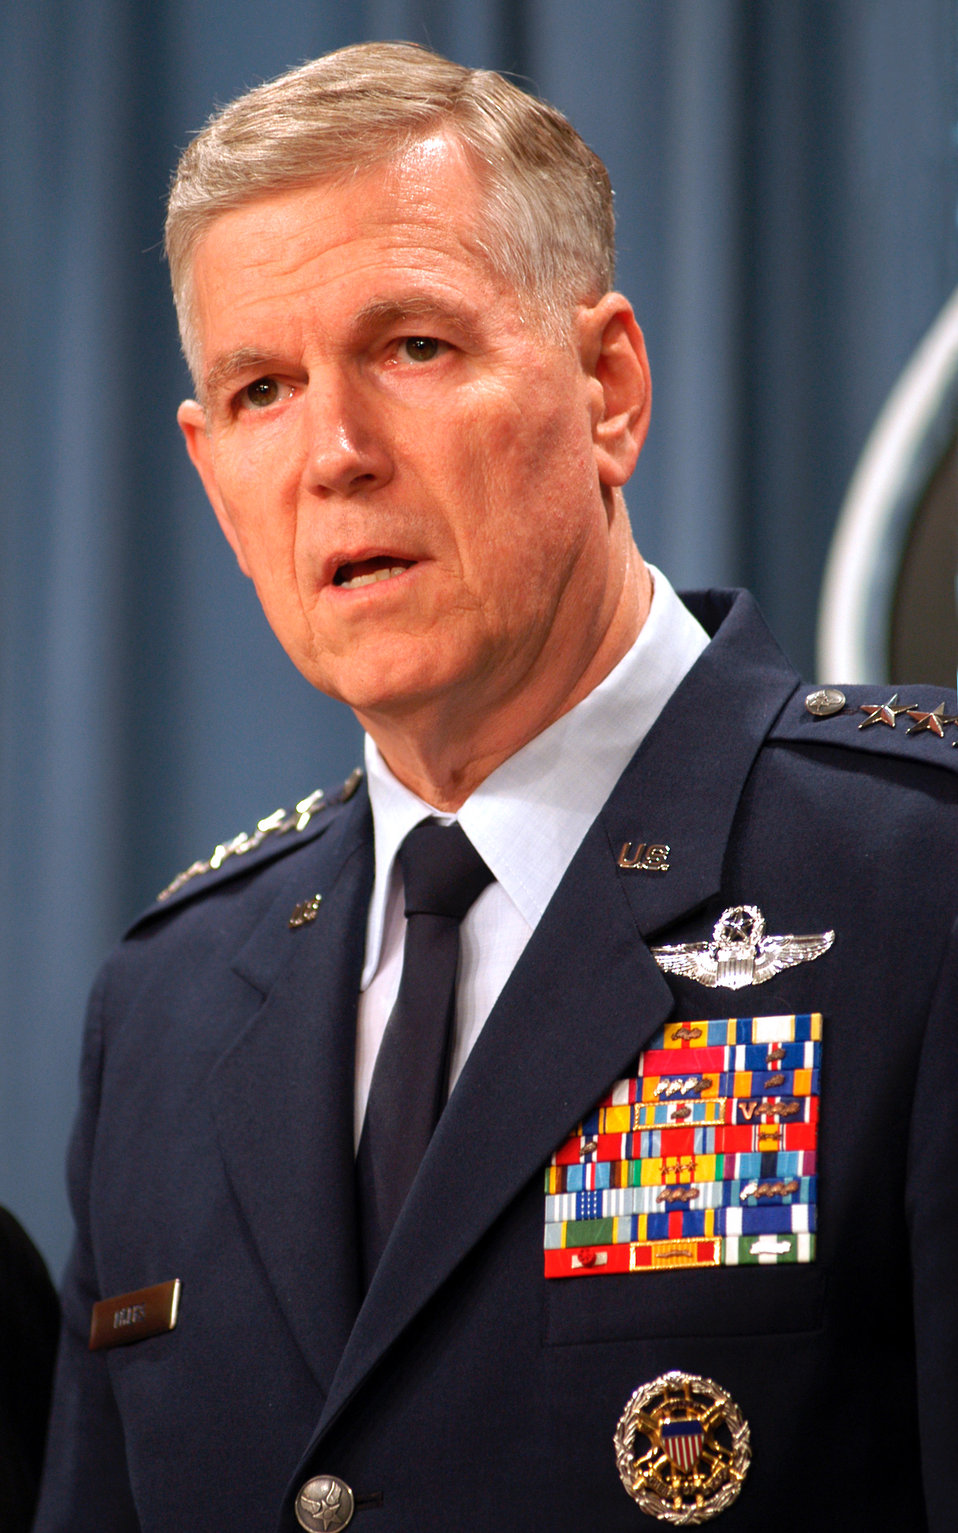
Myers

WASHINGTON -- Chairman of the Joint Chiefs of Staff Gen. Richard B. Myers answers a reporter's question on the first actions against Iraq as part of Operation Iraqi Freedom during a Pentagon press briefing March 20. Myers and Secretary of Defense Donald H. Rumsfeld updated reporters on the opening strike in Baghdad.